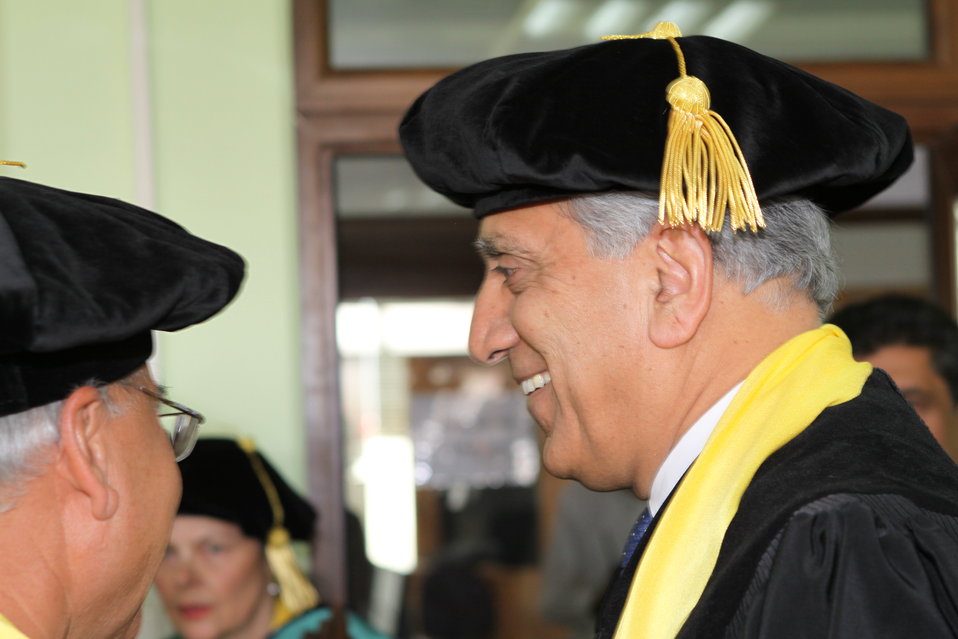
100526 AUAF Graduation 078